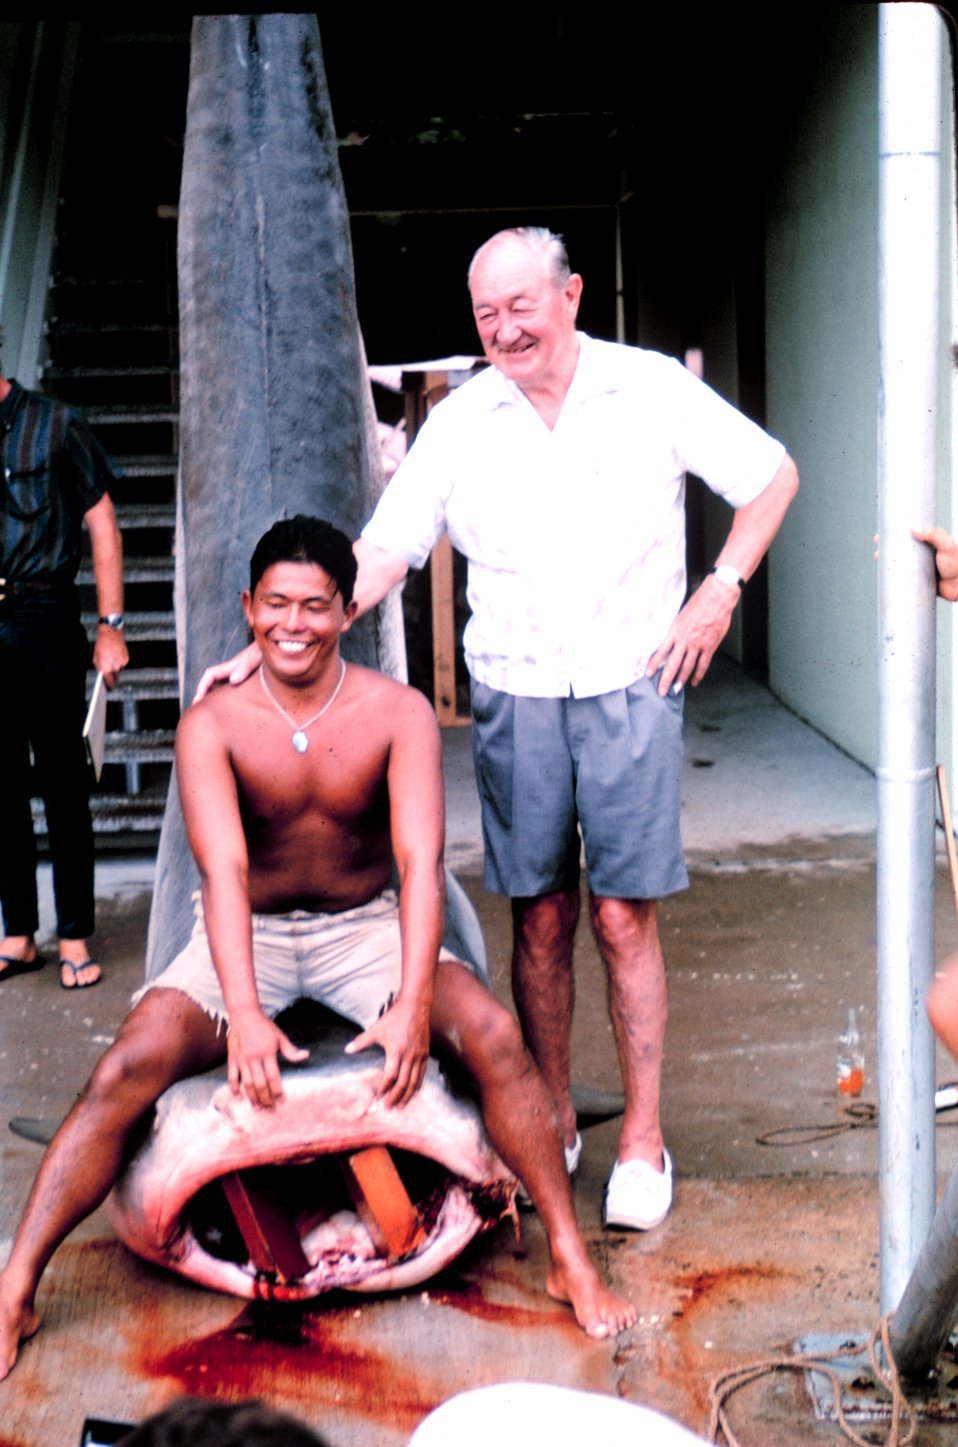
Bob Nishimoto and Mr. Pauley, owner of Coconut Island, a benefactor of the Hawaii Institute of Marine Biology.